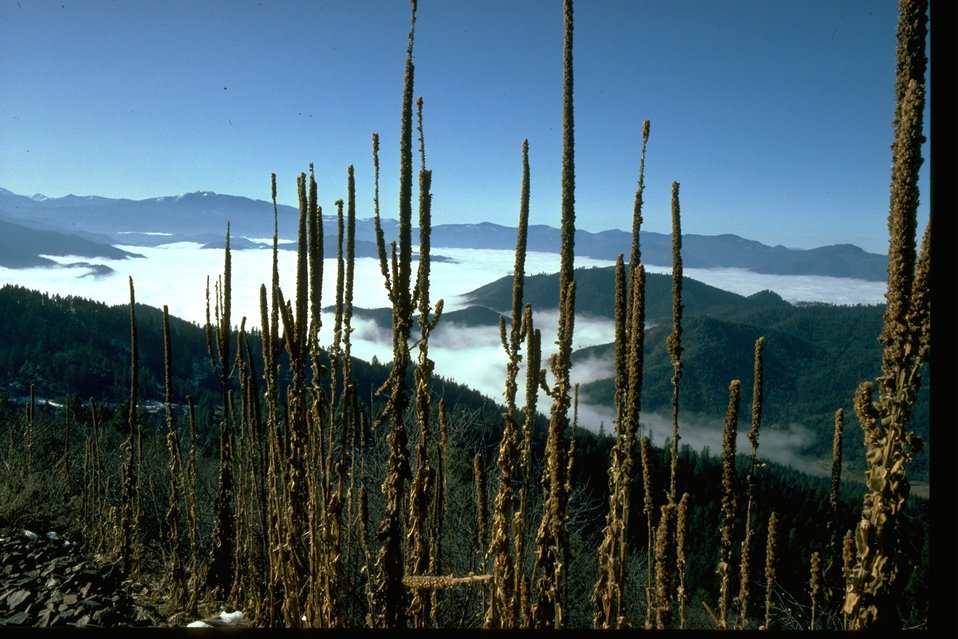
Fogged in valley from Mount Isabelle.